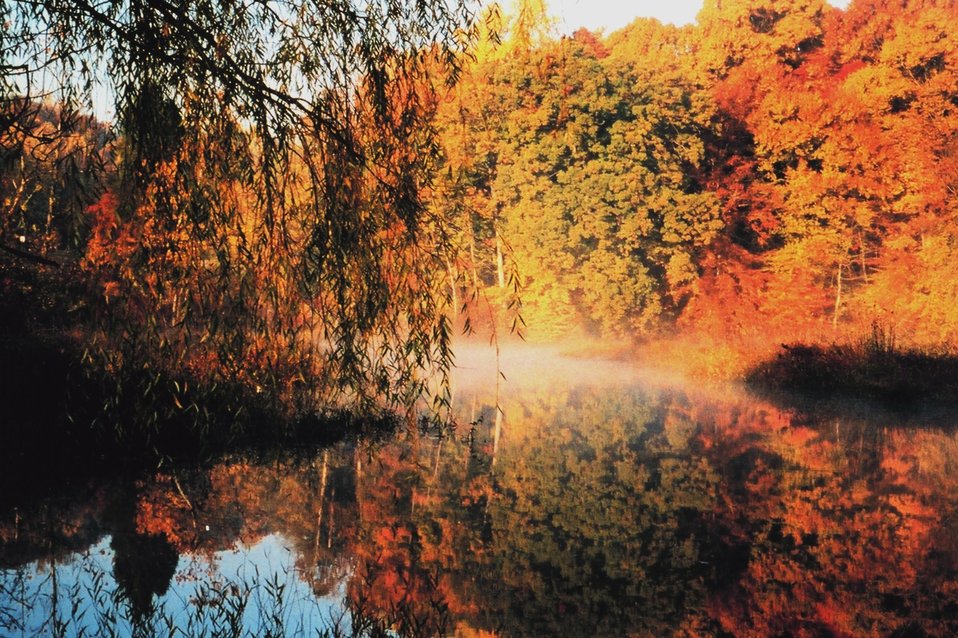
Early morning fog and autumn colors reflected in the Patuxent River at Wayson's Corner.